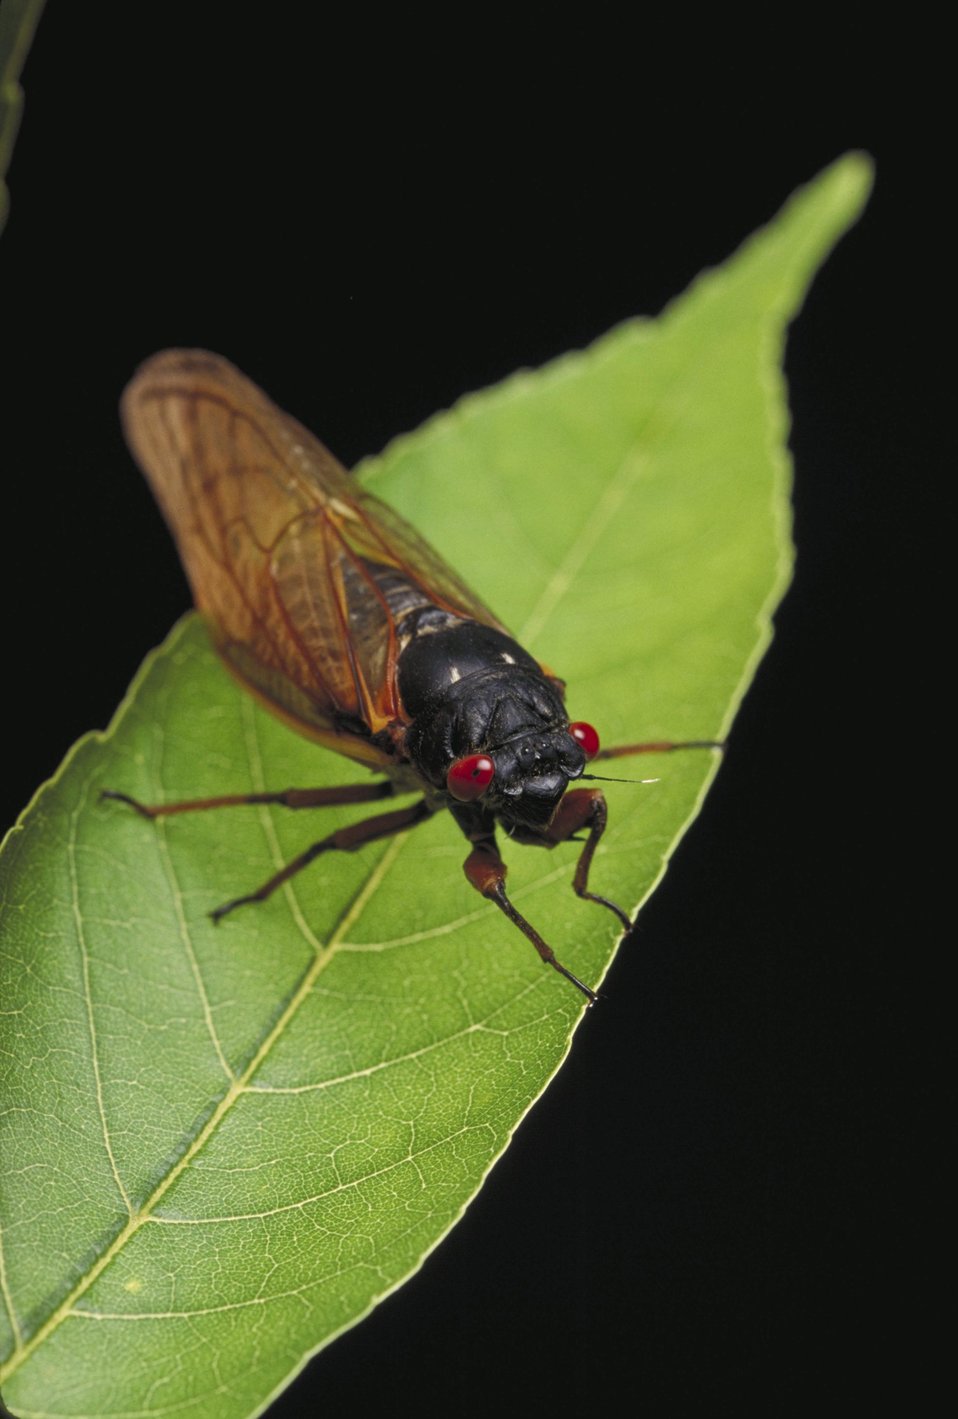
In the early spring of 2013 the eastern half of the U.S. will see and hear the emergence of the 17-year Cicada (Magicicada). The 17-year Cicada is a large insect with a black body, red eyes, and delicate wings about an inch and a half long. The Cicada will emerge from the ground as nymphs, climb onto trees and shed their skins. The males will then sing loudly to attract female mates. Once mated the females lay approximately 400 to 600 eggs in tree branches before they die. The nymphs hatch and burrow into the ground and live underground for the next 16 years sucking sap out of tree roots. The cicada’s above ground cycle lasts about a month before they die. Cicada’s have no sting or bite and are harmless to humans and pets, however the constant singing is annoying.